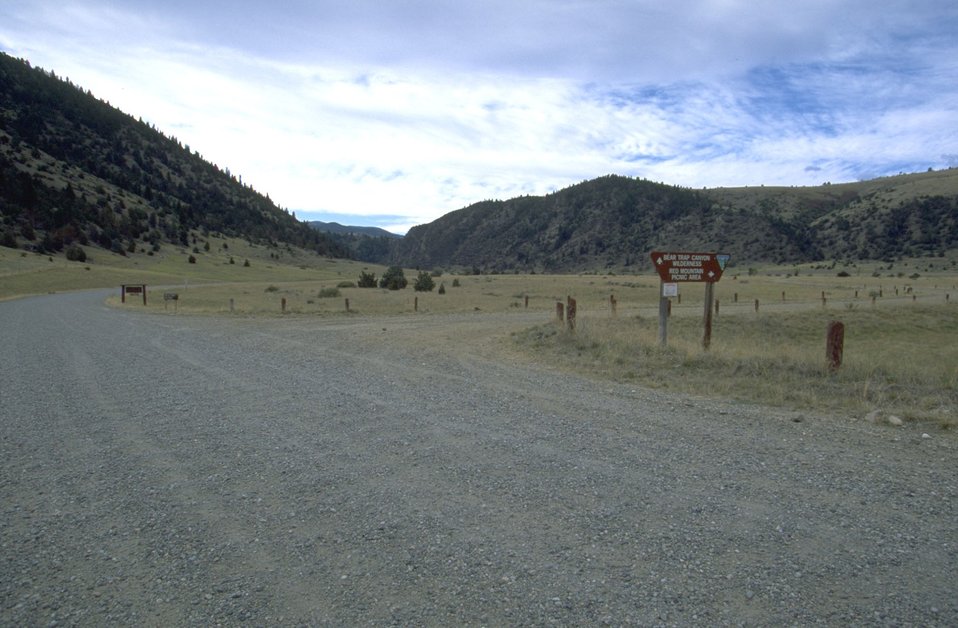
Road to Red Mountain Campground